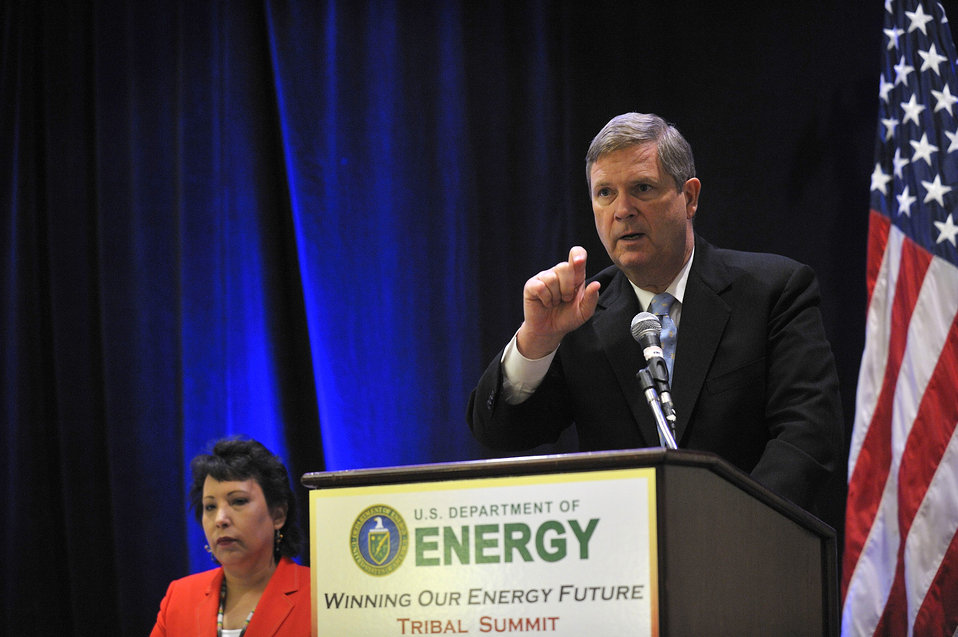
Secretary of Agriculture (USDA), Tom Vilsack